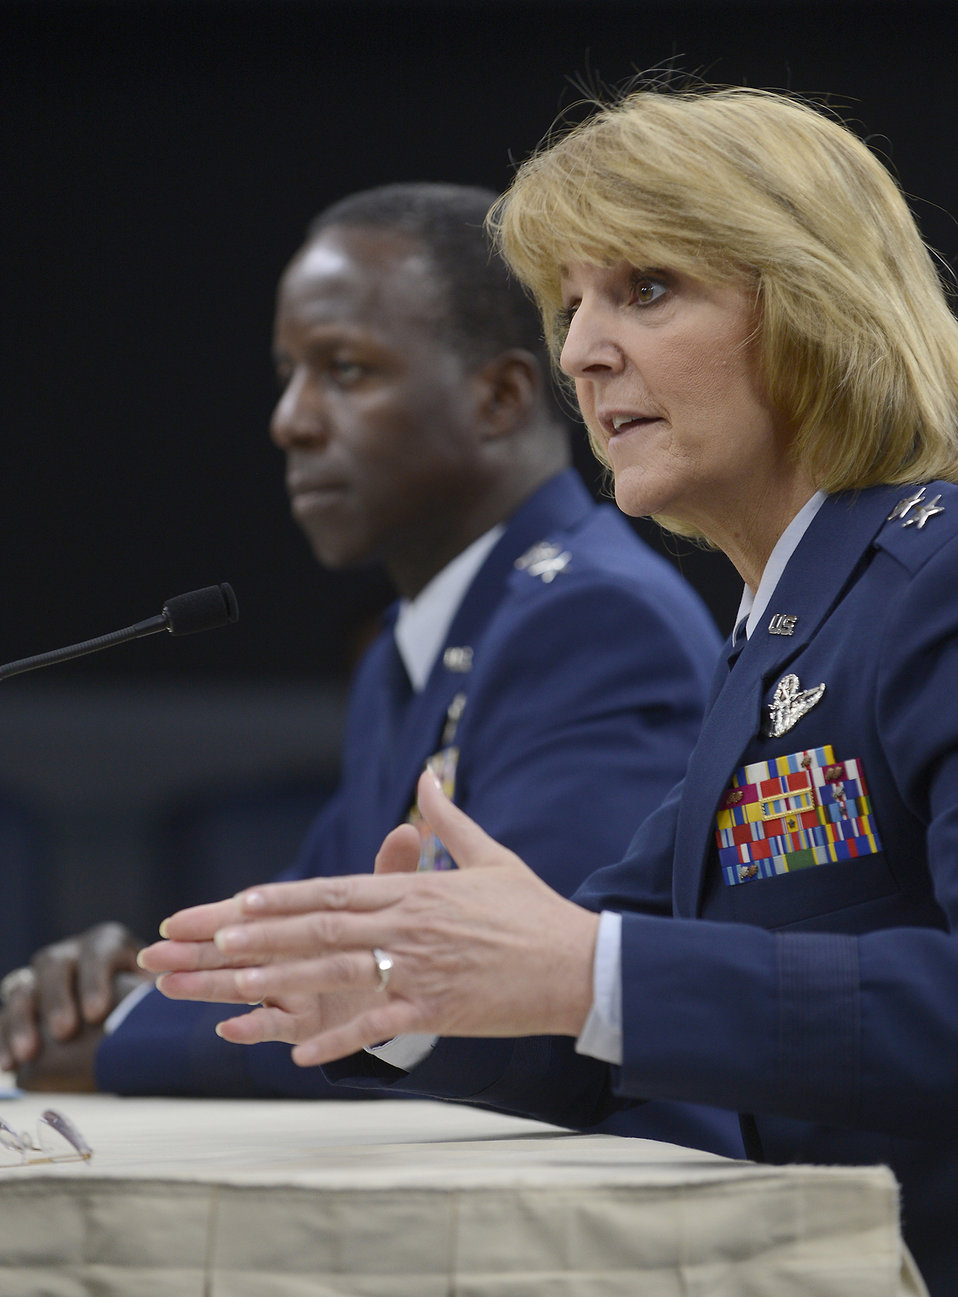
BMT sexual misconduct investigation findings

Maj. Gen. Margaret Woodward, Air Force Chief of Safety and commander of Air Force Safety Center at Kirtland Air Force Base, N.M., answers questions with Gen. Edward Rice Jr., commander of Air Education and Training Command, during a Pentagon press briefing on Nov. 14, 2012. Rice presented the findings relating to Woodward's investigation into allegations of sexual misconduct at Basic Military Training.